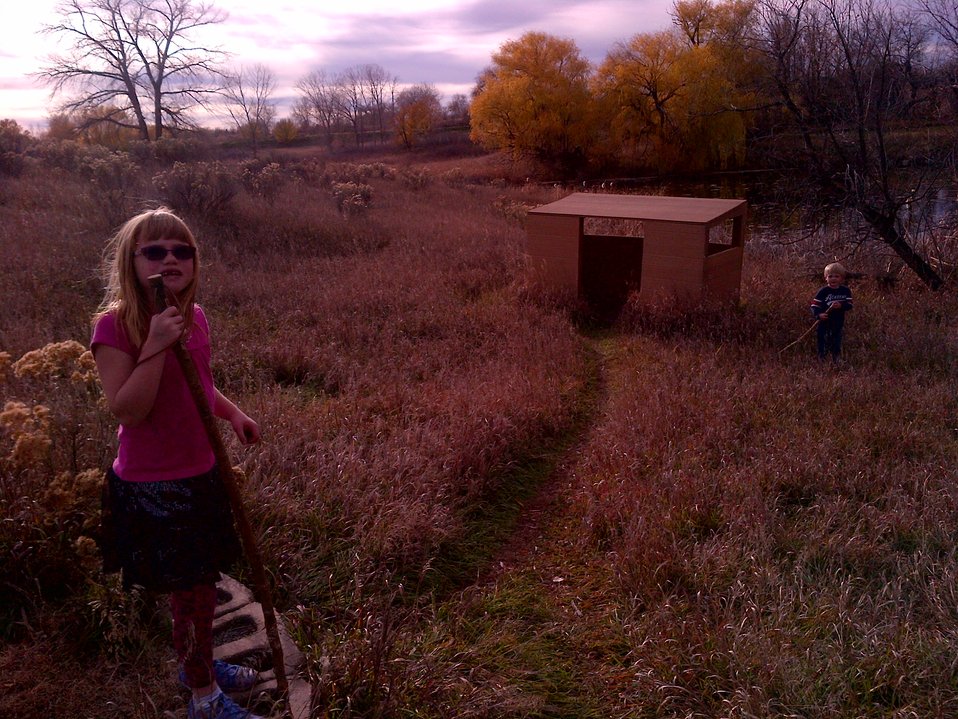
Drop-in Nature Kids